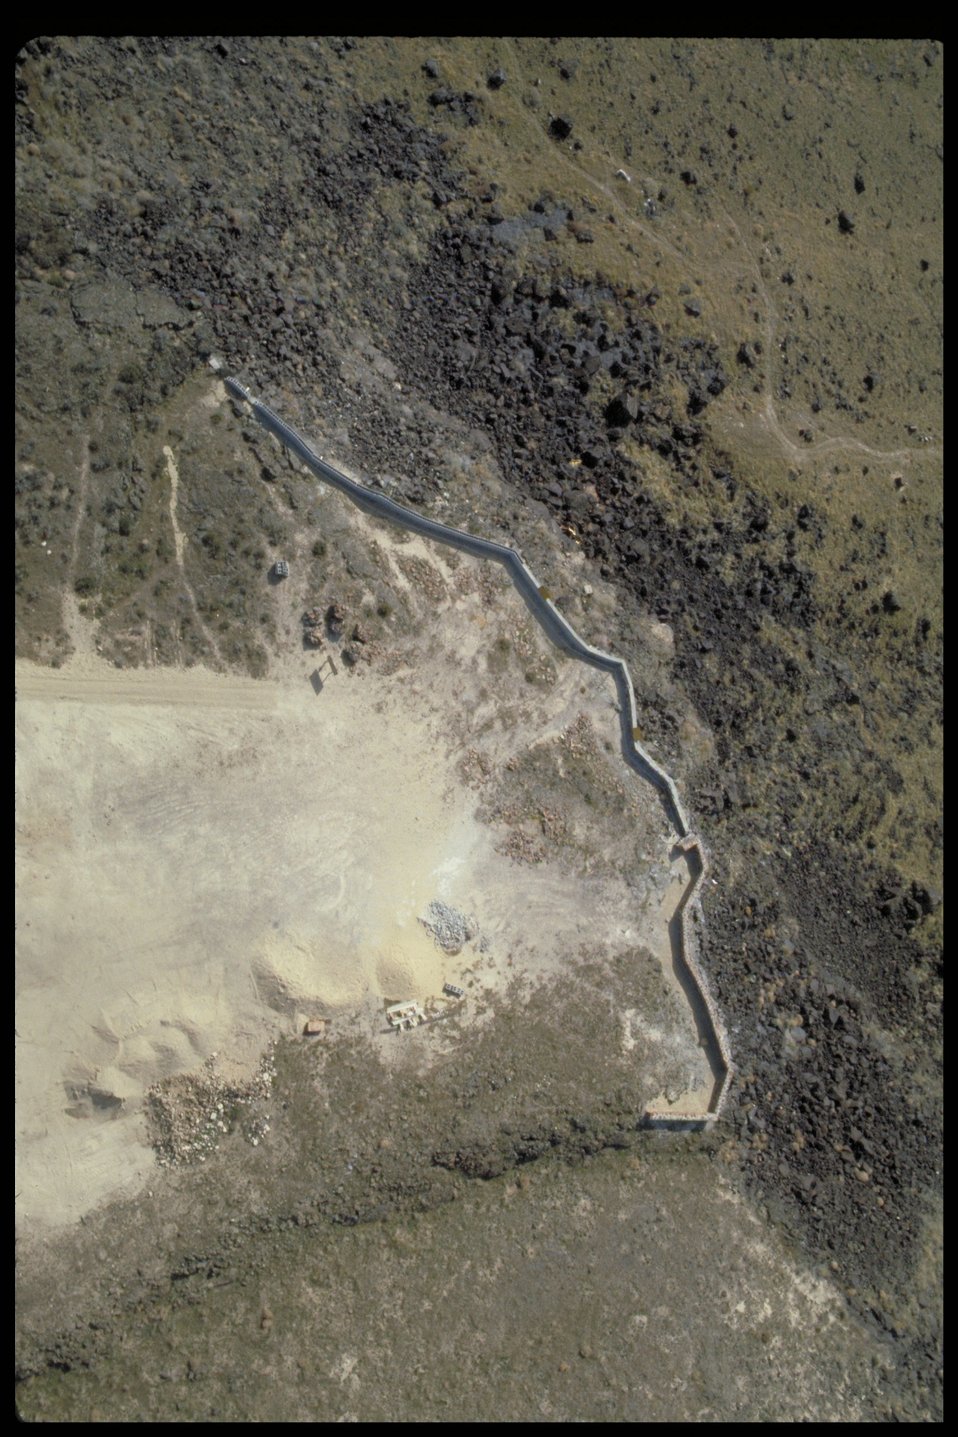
Dedication Point Aerial Birds of Prey National Conservation Area BOP Owyhee Field Office LSRD Lower Snake River District